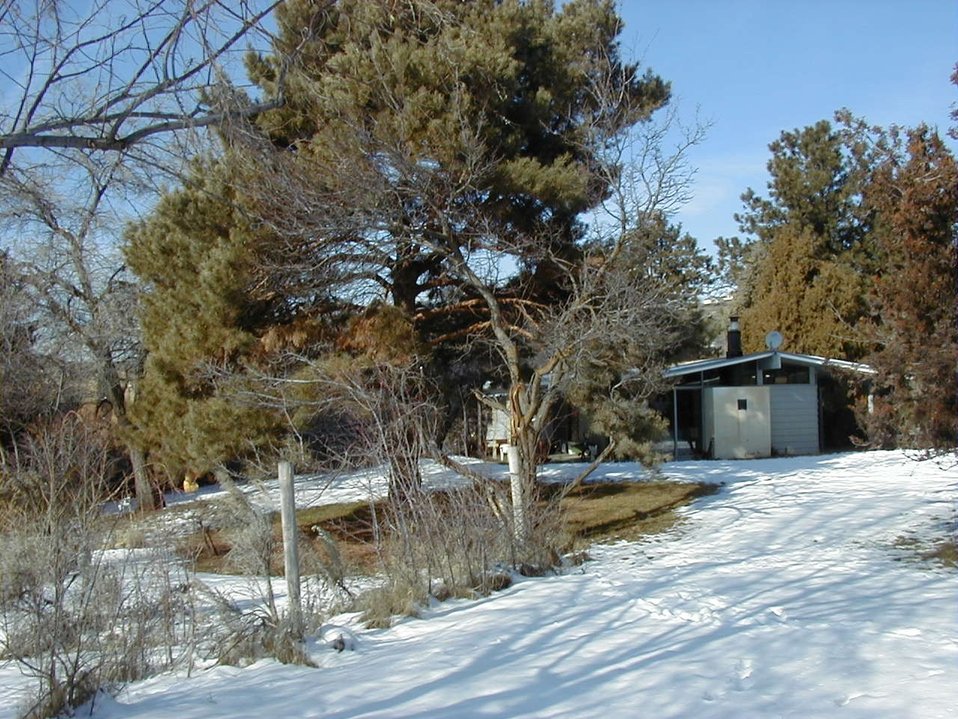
Environmental Education McCord house Boise Front Foothills Fire Safety and Urban interface Four Rivers Field Office LSRD Lower Snake River District